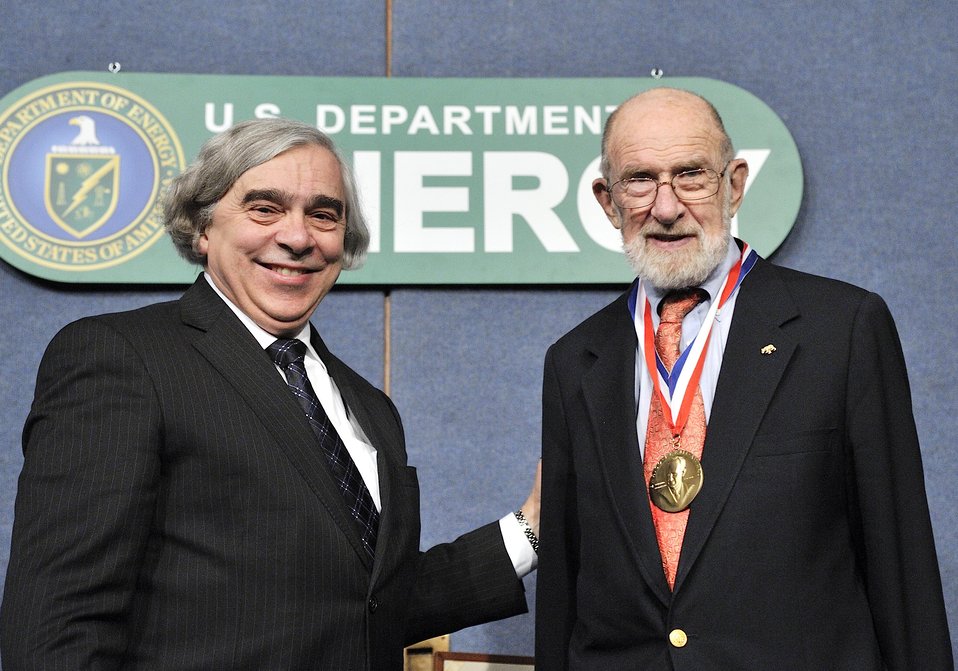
SECRETARY E. MONIZ PRESENTS ANDREW SESSLER WITH THE ENRICO FERMI AWARD ON FEBRUARY 3, 2014 AT THE U.S. DEPARTMENT OF ENERGY